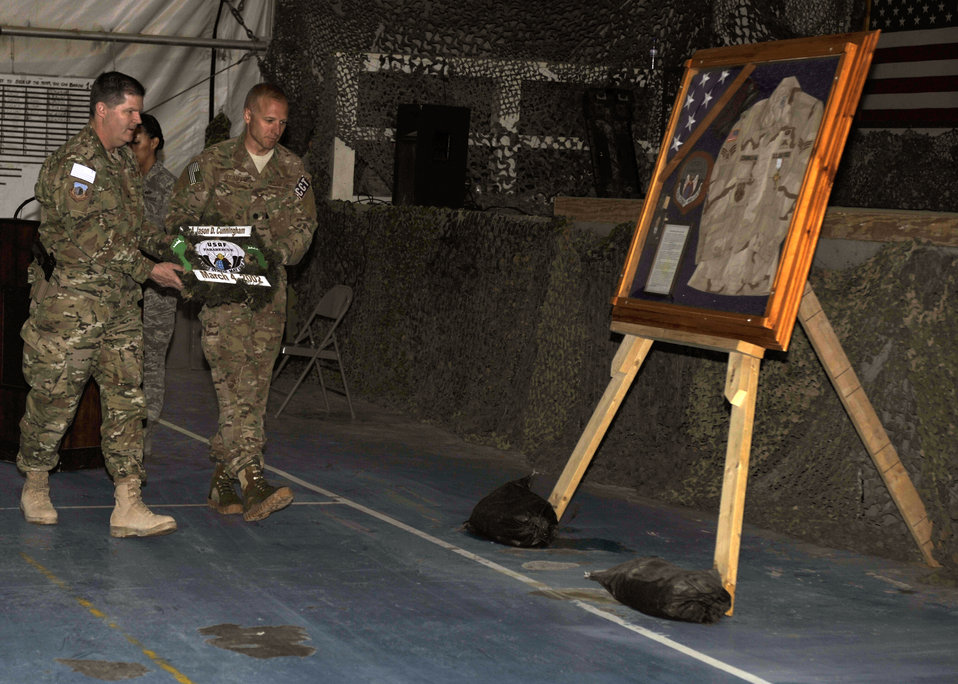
Bagram Airfield service members honor AF hero

Brig. Gen. Thomas Deale (left) and Lt. Col. Spencer Cocanour walk to place an honorary wreath against the shadow box commemorating Senior Airman Jason Cunningham at Bagram Airfield, Afghanistan, March 4, 2012. Cocanour is the commander of the 21st Expeditionary Special Tactics Squadron and Deale is the commander of the 455th Air Expeditionary Wing. Cunningham was a pararescueman who died in combat March 4, 2002, while providing medical treatment under fire, saving 10 men’s lives.